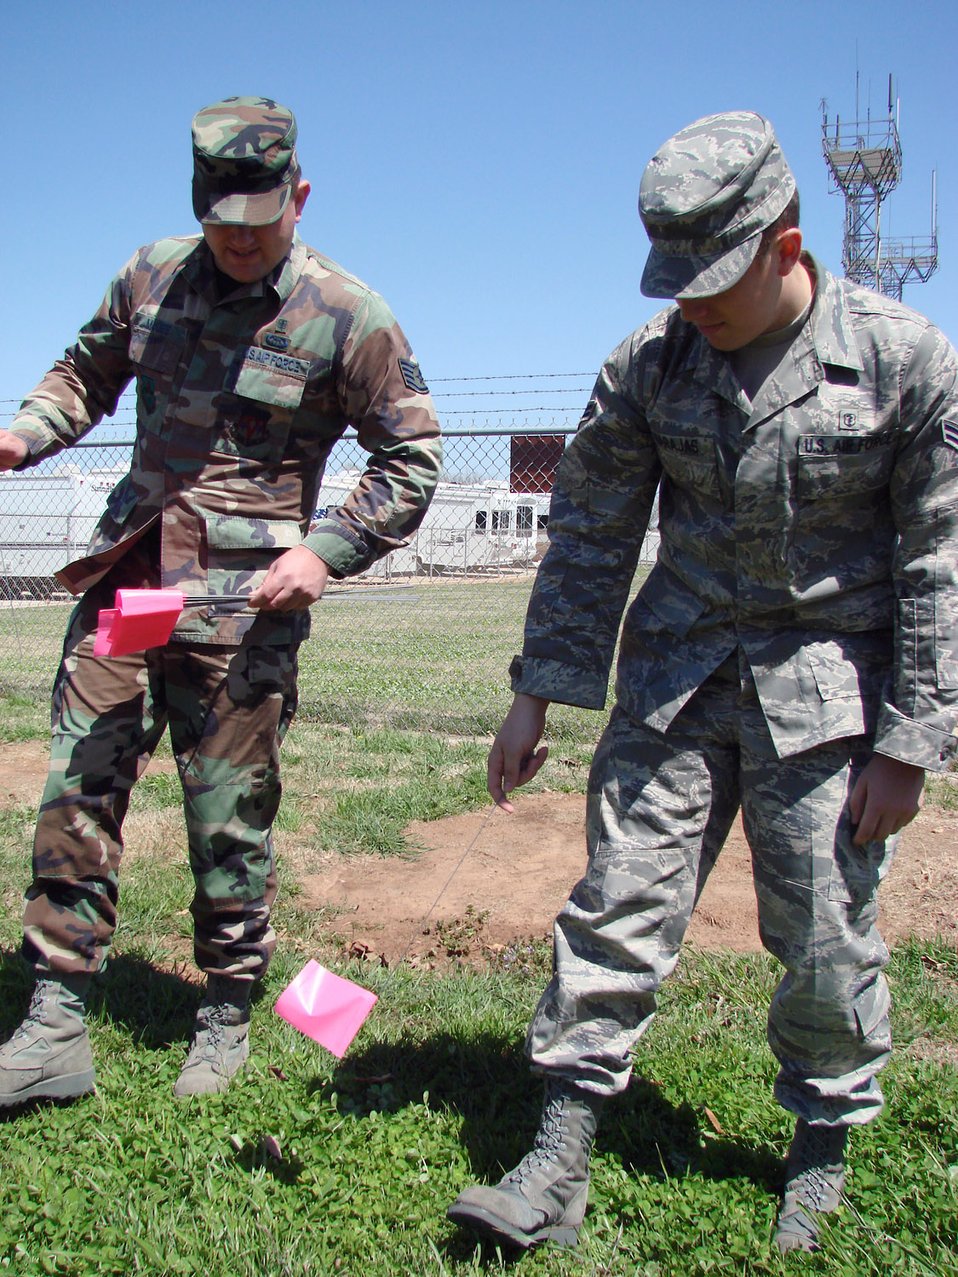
Did you say CSI or AFOSI?

Staff Sgt. Andrew McGee (left) and Airman 1st Class Justin Barajas, both with 71st Medical Group bioenvironmental engineering at Vance Air Force Base, Okla., mark evidence while walking a grid during an exercise April 15 on how to preserve and process a chemical or weapon-of-mass-destruction scene that may be a result of criminal activity.